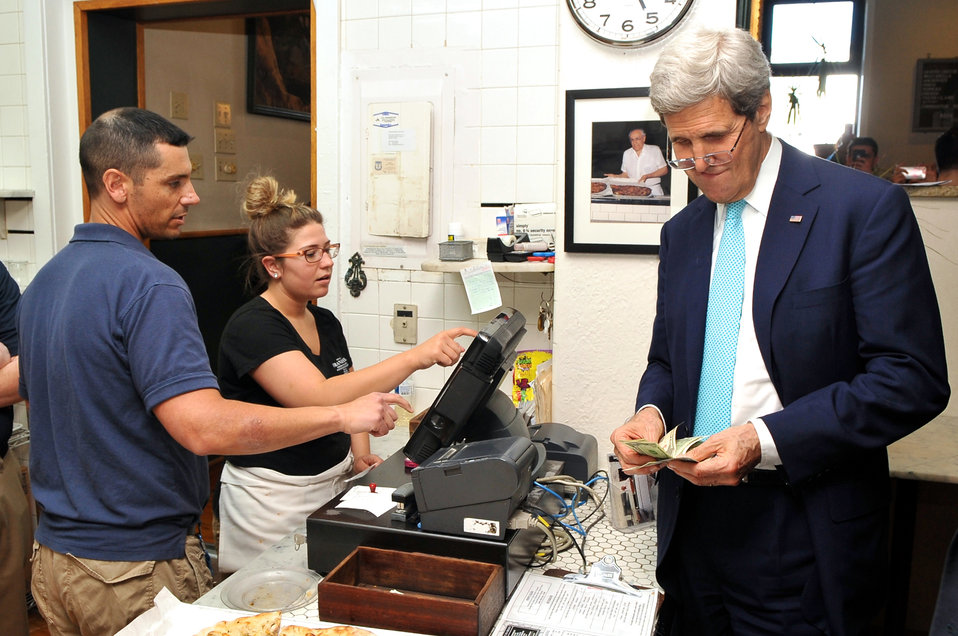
Secretary Kerry Pays For Pizza Order at Frank Pepe's in New Haven

U.S. Secretary of State John Kerry pays for three takeout pizzas he bought at the famed New Haven, Connecticut, pizza shop Frank Pepe's during an impromptu stop after the 1966 Yale University graduate addressed Class Day ceremonies on May 18, 2014.